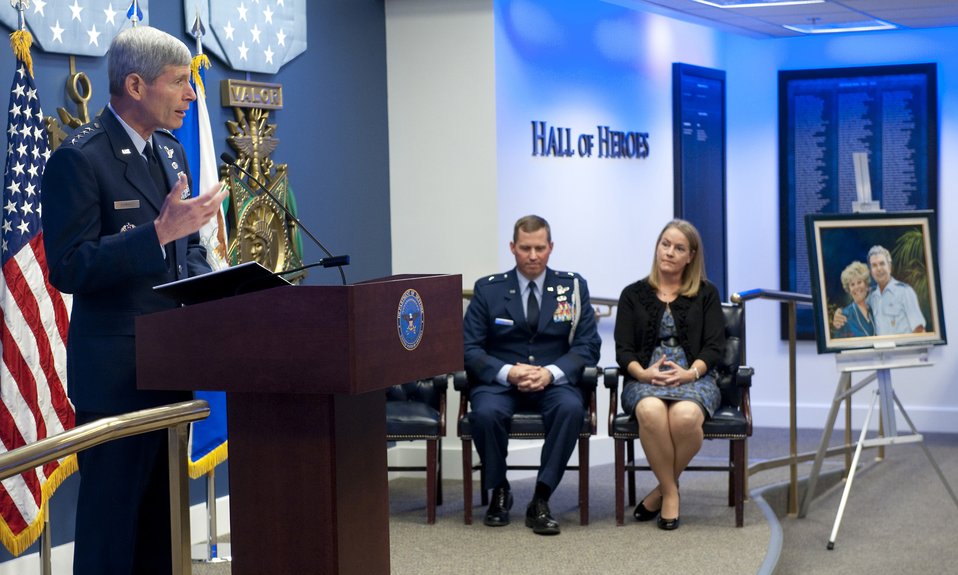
O'Malley Award

Air Force Chief of Staff Gen. Norton Schwartz (left) introduces Brig. Gen. Thomas W. Bergeson and his wife Pamela during a ceremony in the Pentagon Oct. 4, 2010, prior to presenting them with the General and Mrs. Jerome F. O'Malley award. The award is presented annually to the wing commander and spouse team who have best exhibited their own courage, power, grace and beauty in caring for Air Force families. The award was established after the O'Malleys, who were known for their leadership and contributions to Air Force families and communities, were tragically killed in a plane crash in 1985.